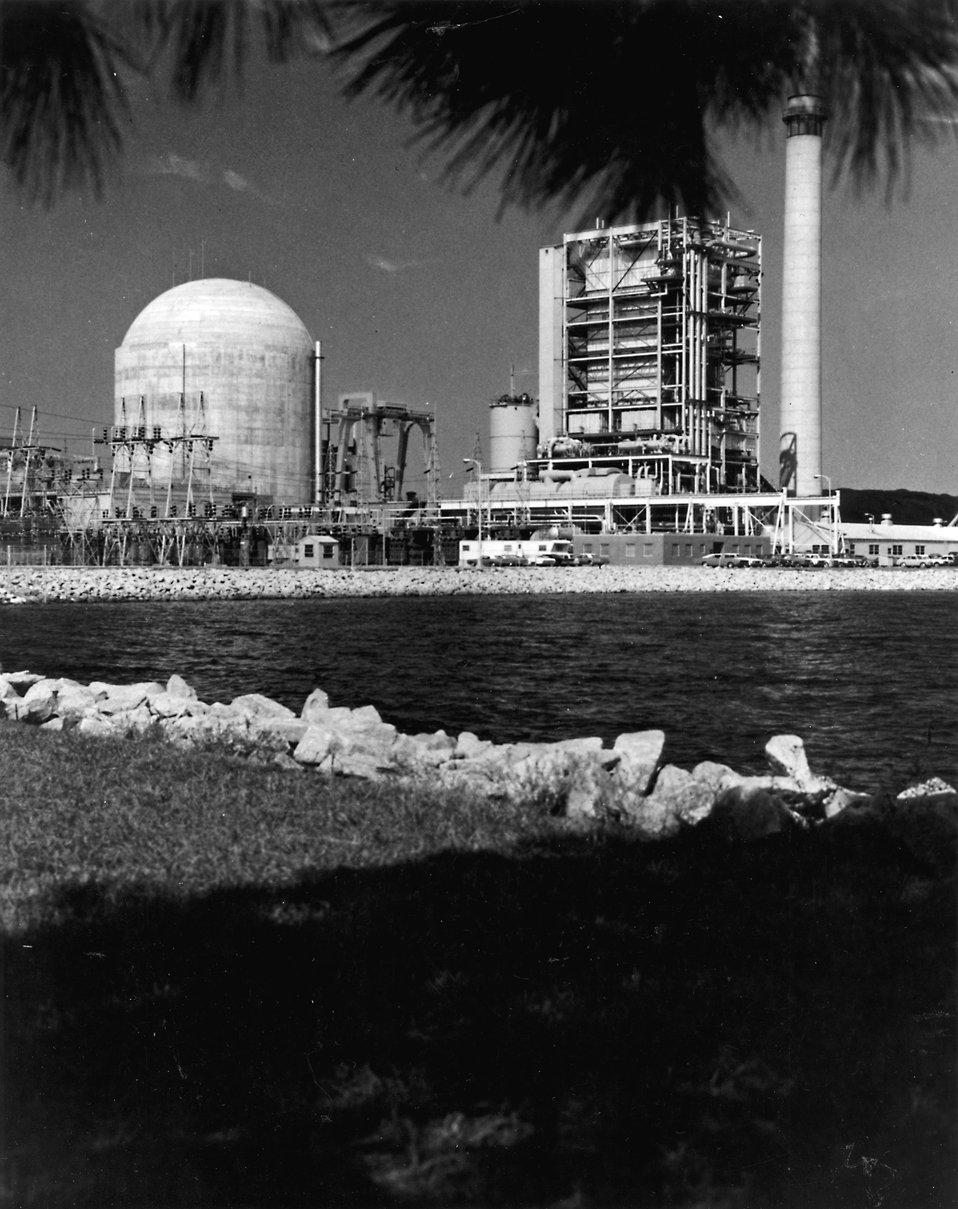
Martsville, SC... Ground view of the Robinson #1 fossil-fired unit and the HS Robinson Steam Electric Plant #2 nuclear unit. Circa 1975.